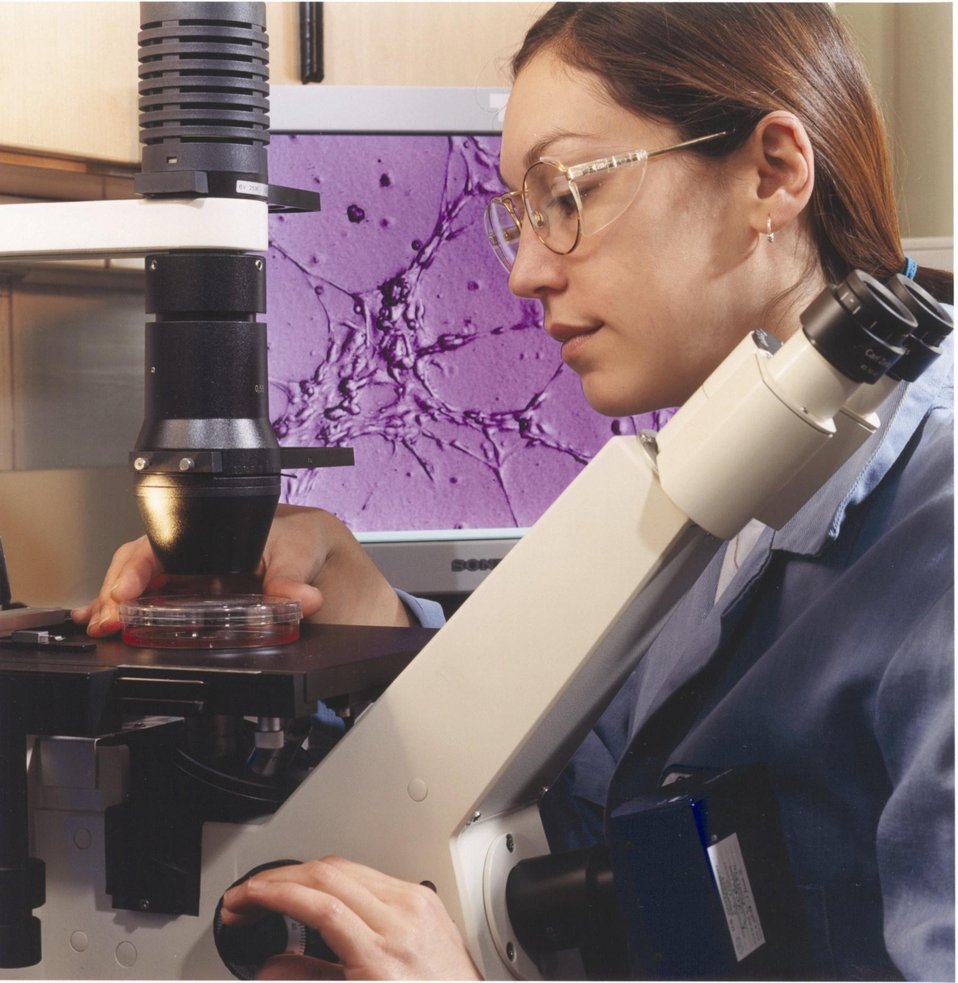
A SCIENTIFIC ASSISTANT IN THE BIOSCIENCES DIVISION MAKING ADJUSTMENTS TO A LIGHT MICROSCOPE TO STUDY ENDOTHELIAL CELL GROWTH.

ARGONNE RESEARCHERS STUDY THE EARLIEST STEPS IN CAPILLARY FORMATION IN TUMORS. THEY HAVE IDENTIFIED 280 PROTEINS THAT ENDOTHELIAL CELLS (CELLS THAT FORM BLOOD VESSELS) SECRETE IN LARGE QUANTITIES DURING CAPILLARY GROWTH. SINCE PROTEINS ARE RESPONSIBLE FOR CELLULAR STRUCTURE AND COMMUNICATION, BIOLOGISTS WANT TO LEARN WHICH PROTEINS TO BLOCK IN ORDER TO DEVELOP DRUGS THAT STOP TUMOR GROWTH BY HALTING CAPILLARY FORMATION.